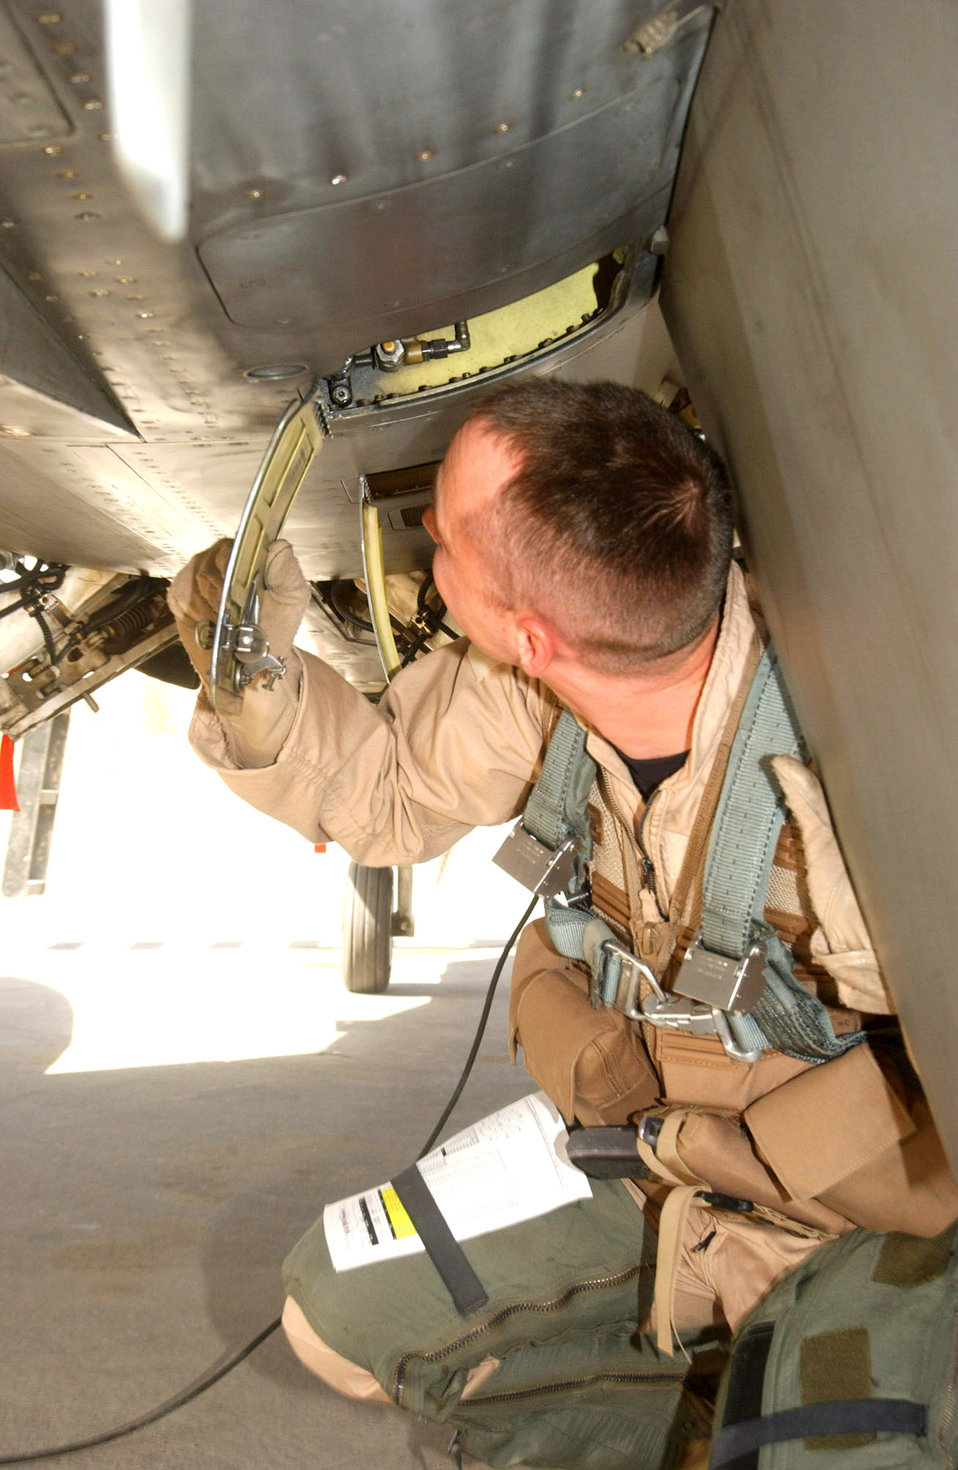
F-16 pilots provide support for troops on the battlefield

BALAD AIR BASE, Iraq -- First Lt. Christopher Jones completes an inspection of his aircraft before departure. Pilots work alongside maintainers to ensure each mission goes off without a hitch. Using the training they receive at their home stations, pilots are using their weapons systems to provide convoy escort, raid support and infrastructure reconnaissance for troops on the ground. Lieutenant Jones is an F-16 Fighting Falcon pilot with the 510th Expeditionary Fighter Squadron.